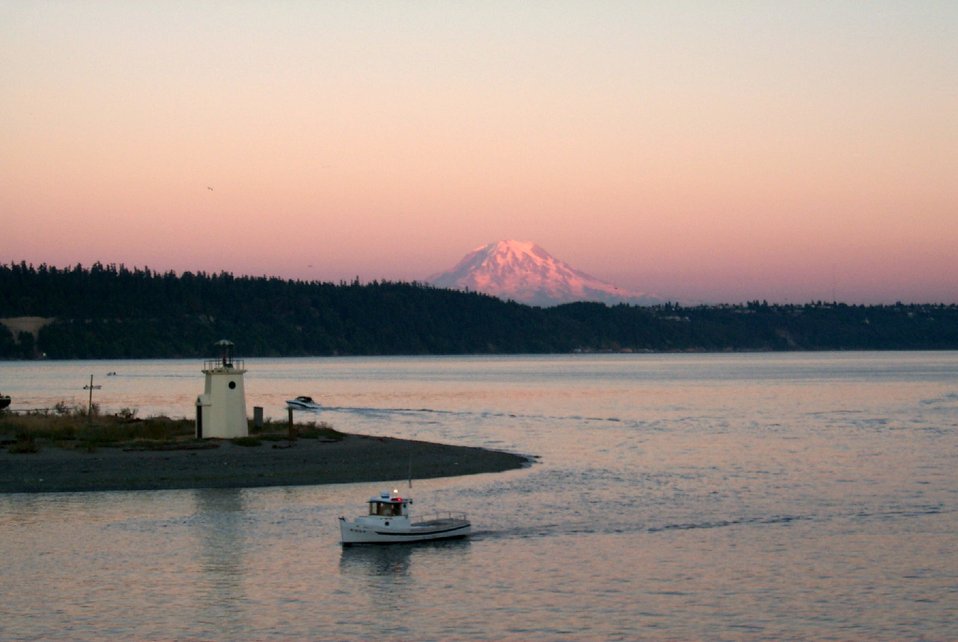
View of Mount Rainier at sunset from Gig Harbor.